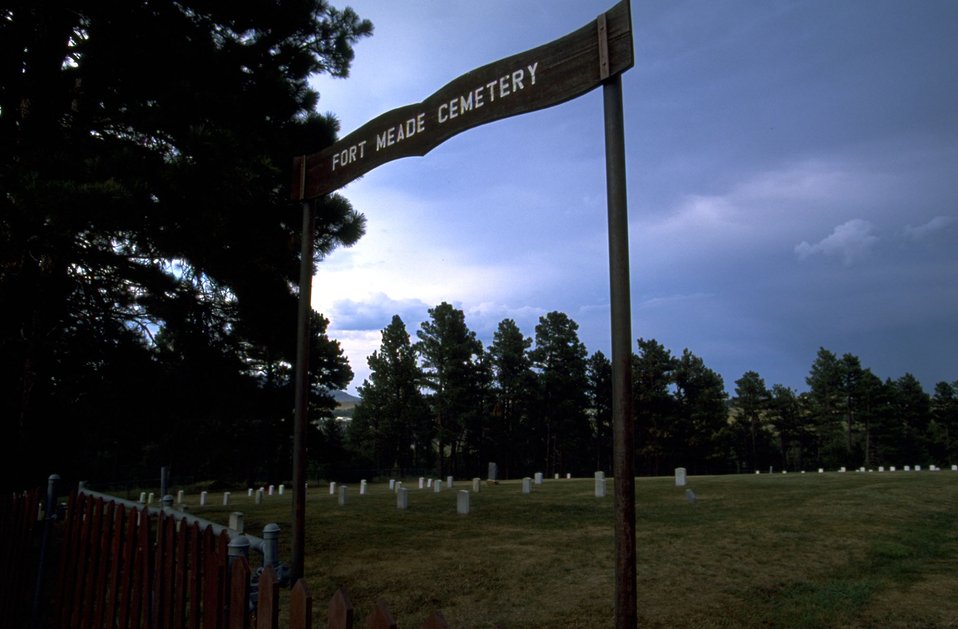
Old Post Cemetery at the south end of Fort Meade